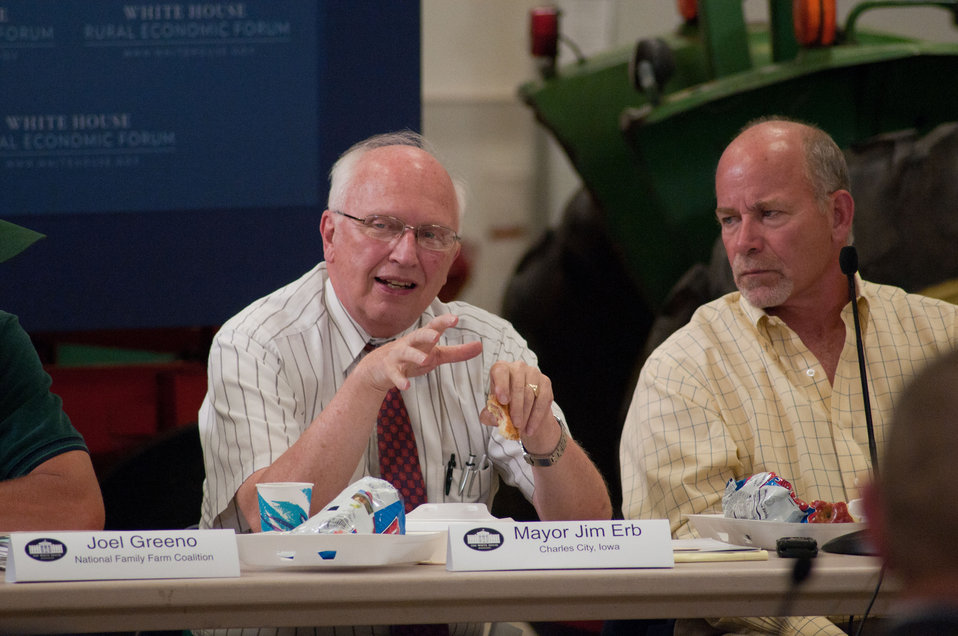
Charles City, Iowa Mayor Jim Erb, speaks to U.S. Department of Agriculture Secretary and chair of the White House Rural Council, Tom Vilsack, and other stakeholders, during a meeting at the Northeast Iowa Community College, IA, for the White House Rural Economic Forum, on Tuesday, August 16, 2011.